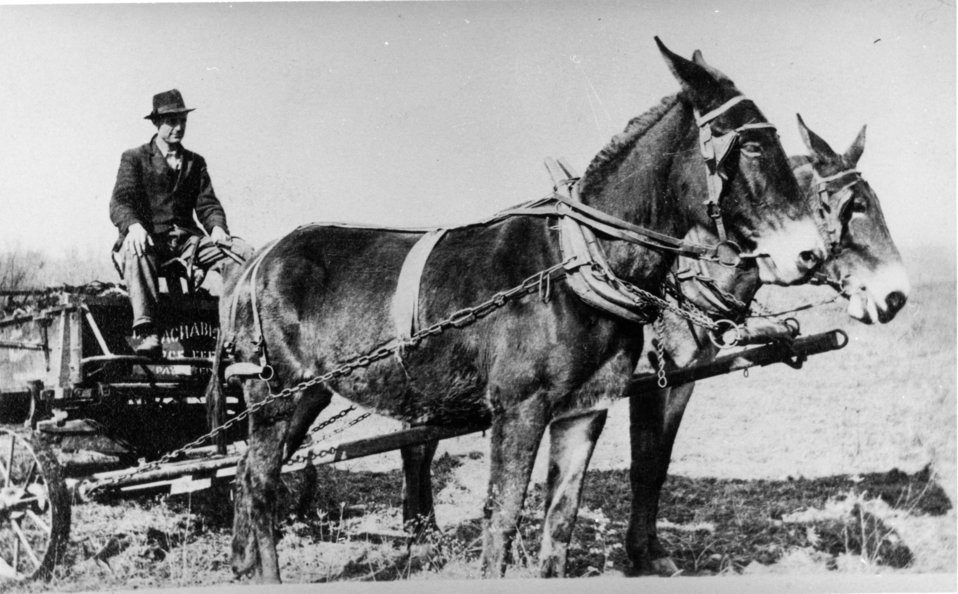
Early settlers at Oak Ridge